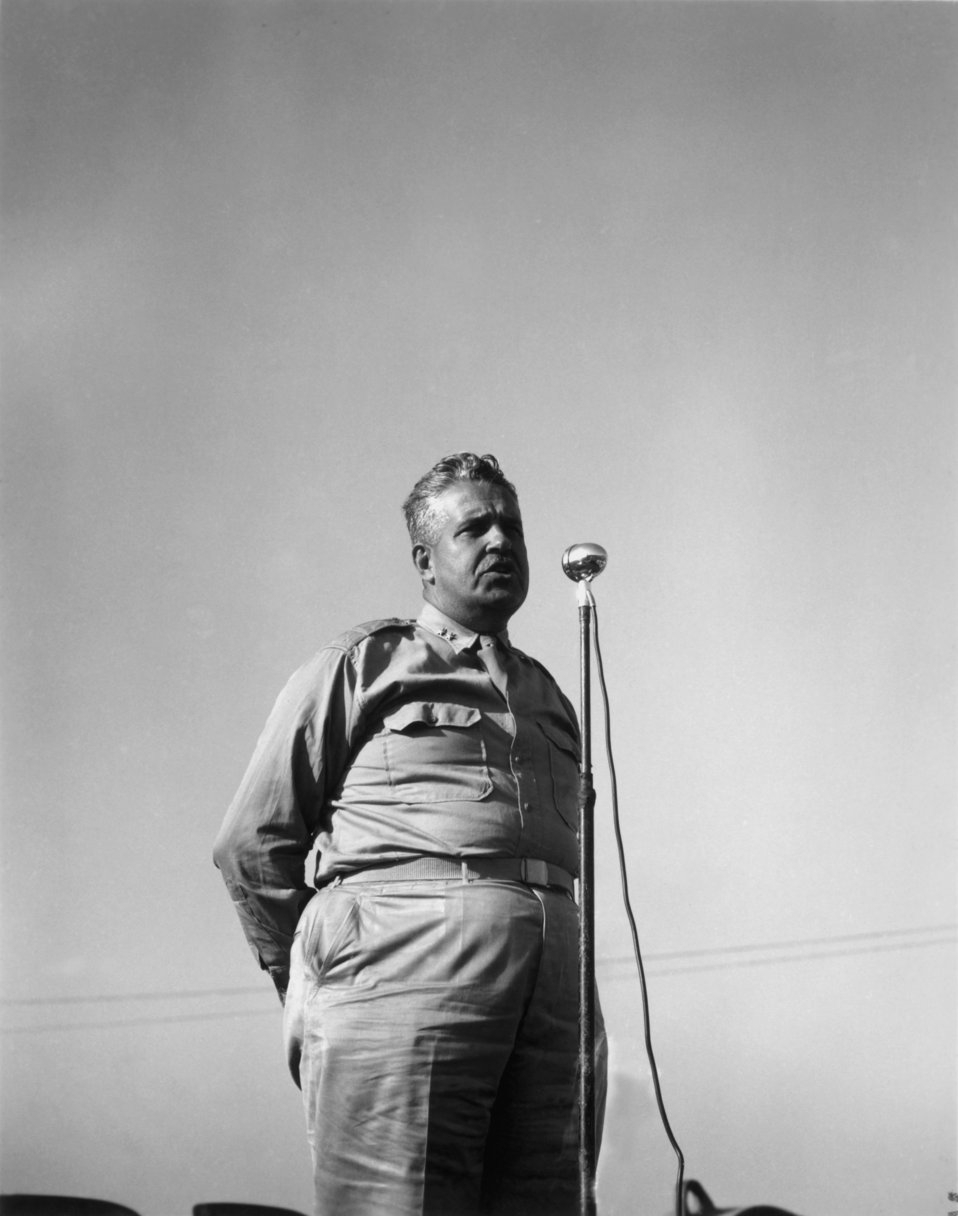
General Leslie Groves Speaking to Workers Oak Ridge

Pro 976-3 DOE photo by Ed Westcott General Leslie Groves Speaking to Workers Oak Ridge Tennessee 8-29-1945